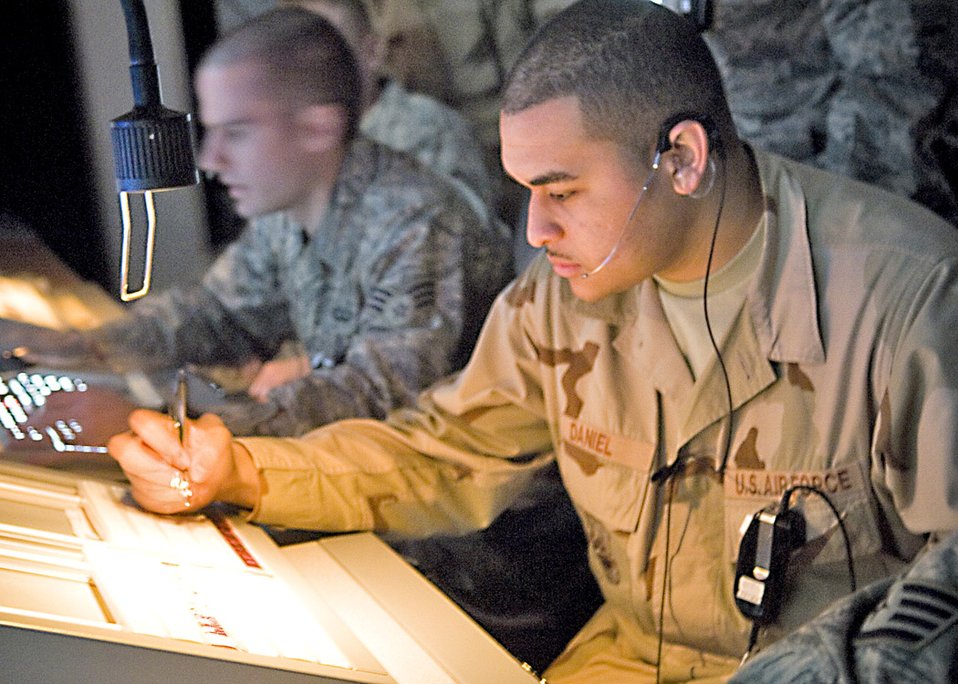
Balad radar air traffic controllers run skies of Iraq

Senior Airman David Daniel works in the approach control assistant position at Balad Air Base, Iraq. The assist position marks flight-data strips and coordinates aircraft movement with adjacent facilities. Airman Daniel is a 332nd Expeditionary Operations Support Squadron air traffic controller and is deployed from Royal Air Force Lakenheath, England.